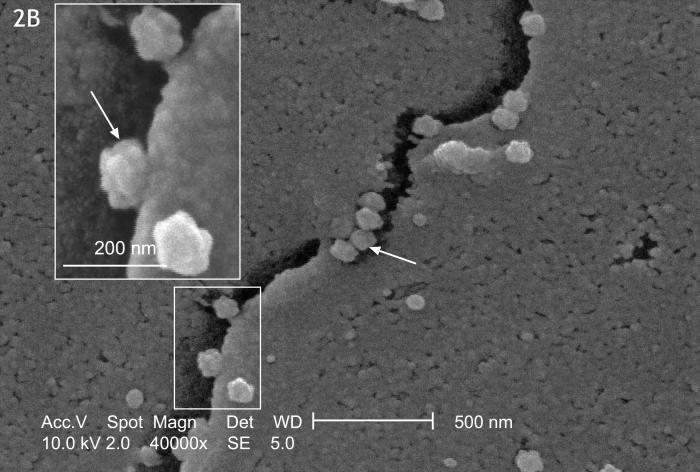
This SEM of SARS-infected Vero E6 cells reveals the protrusion of 'knobby', 'rosettelike' viruses from the cells' edges.